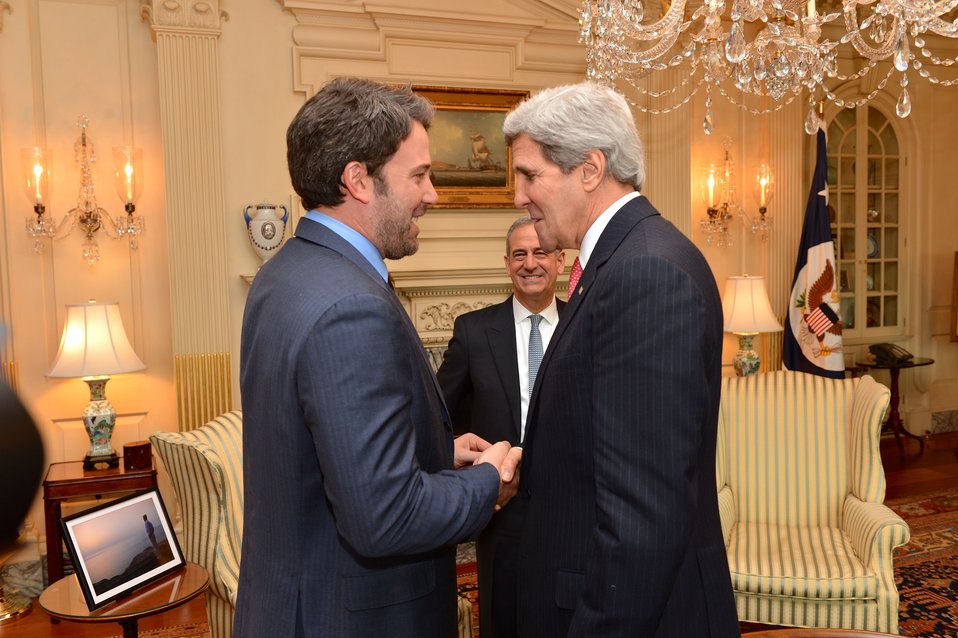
Secretary Kerry Meets With Ben Affleck

U.S. Secretary of State John Kerry and Special Envoy for the Great Lakes Region of Africa and the Democratic Republic of the Congo Russ Feingold meet with Ben Affleck, Founder of the Eastern Congo Initiative, at the U.S. Department of State in Washington, D.C., on February 26, 2014.